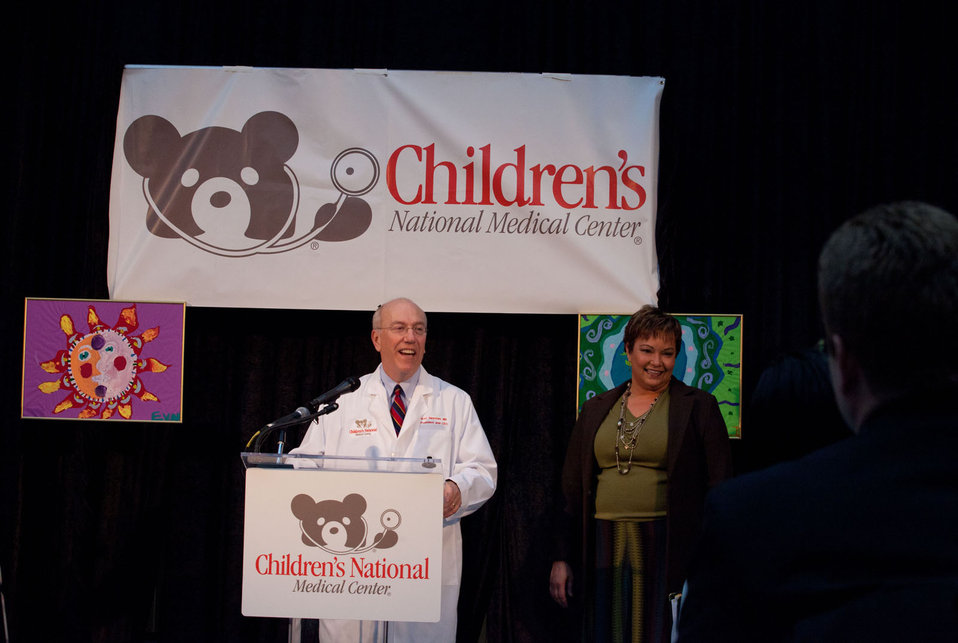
December 12, 2011 Dr. Kurt Newman, CEO, Children's Medical Center greets EPA Administrator LIsa P. Jackson

On December 12, 2011 EPA announced the first national standards to protect American families from power plant emissions of mercury and toxic air pollution like arsenic, acid gas, nickel, selenium, and cyanide.